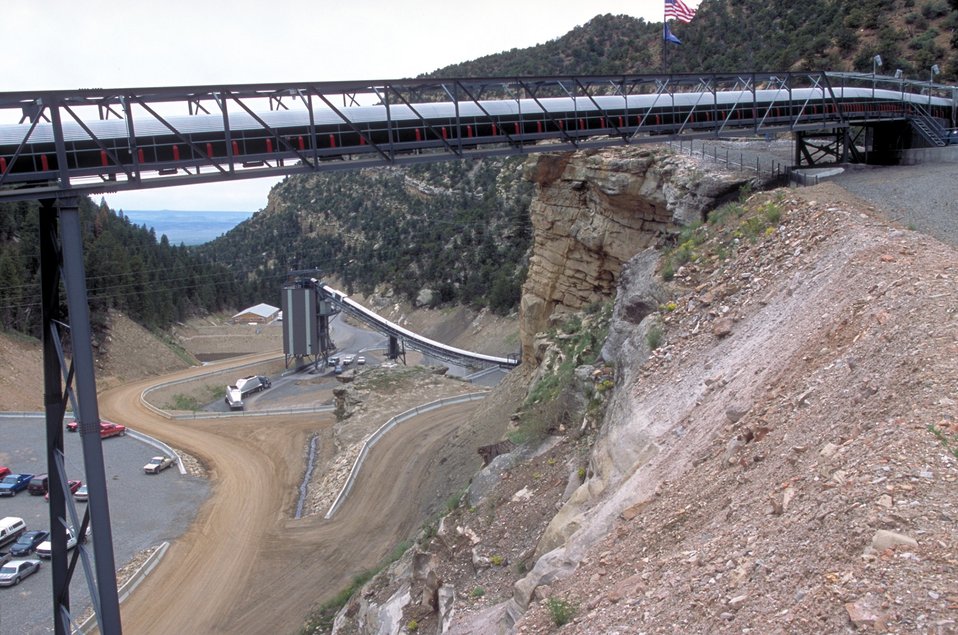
Coal production near Price, Utah.